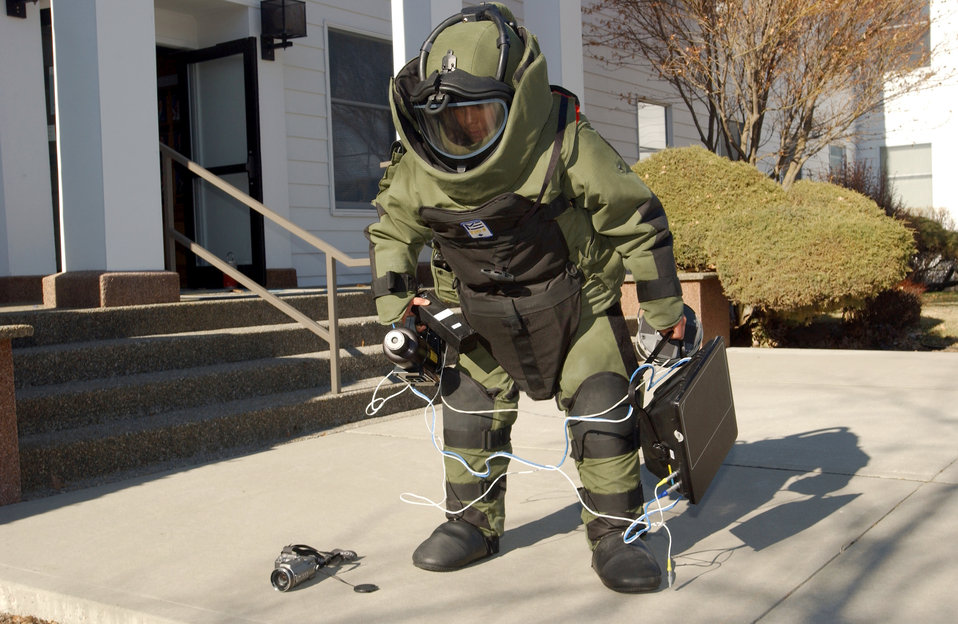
EOD

FAIRCHILD AIR FORCE BASE, Wash. (AFPN) -- Senior Airman Sarah Martinez prepares to enter a building where a simulated suspect device was found during an exercise here March 9. Airman Martinez is an explosive ordnance disposal technician with the base's 92nd Civil Engineer Squadron.